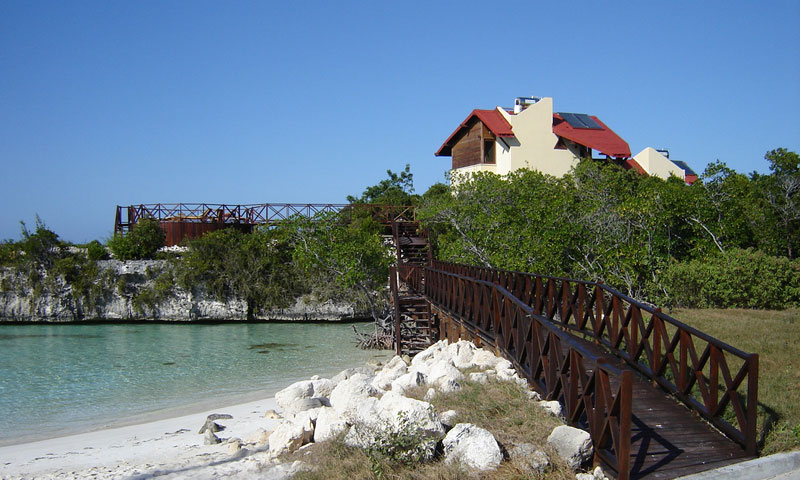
Cayo Las Brujas